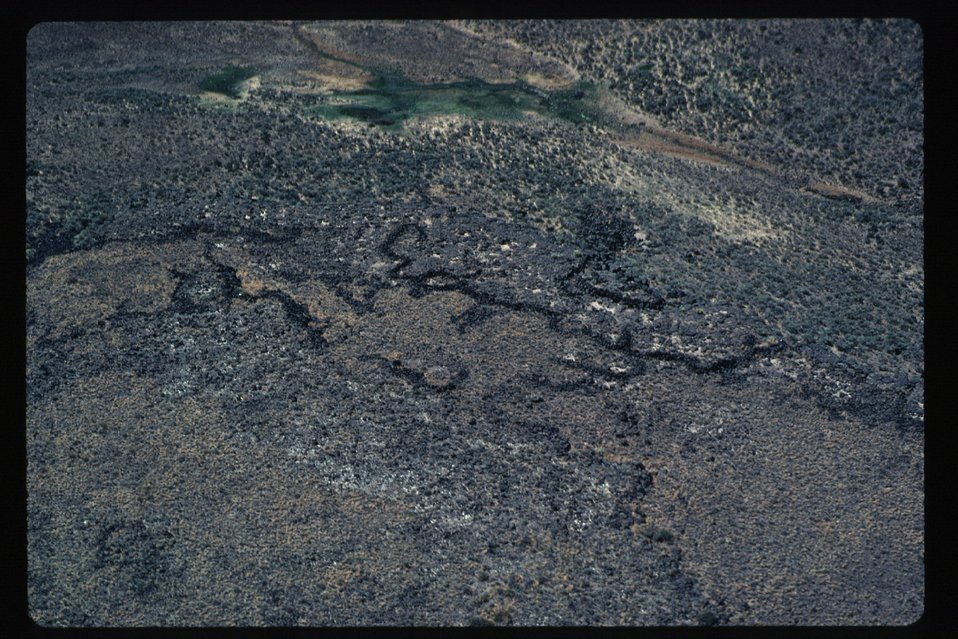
Rock Alignments Archeology LSRD Lower Snake River District